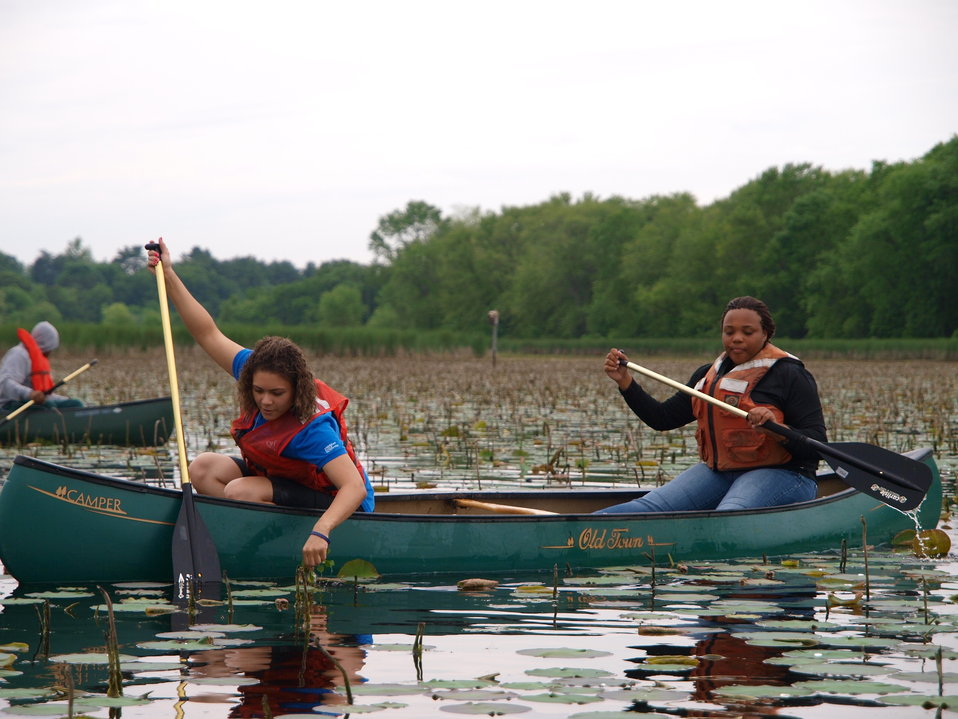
Picking Waterchestnuts